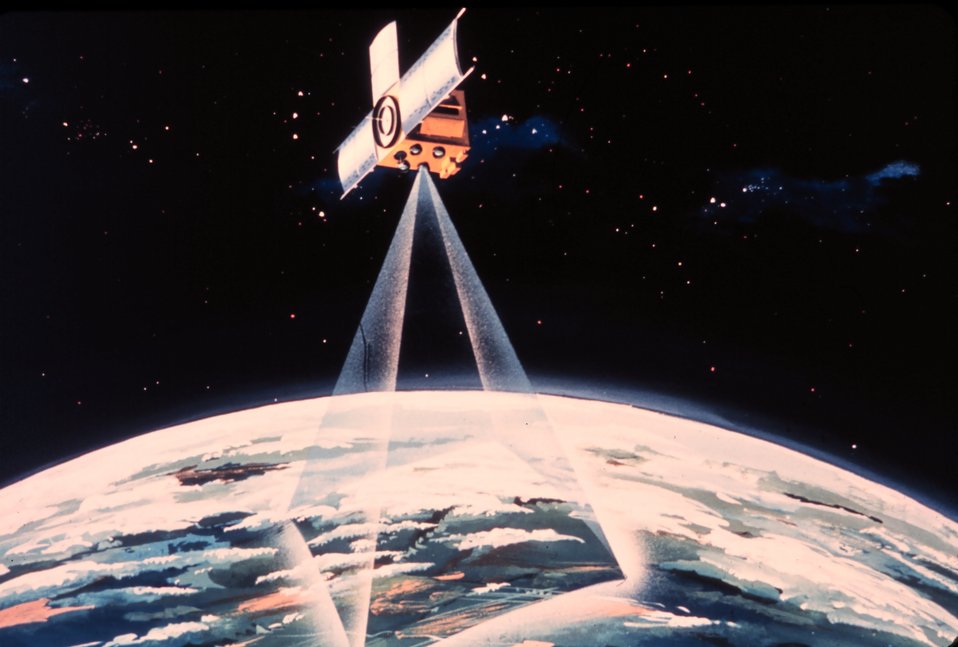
Graphic of ITOS satellite series - included ITOS-1, and NOAA-2 to NOAA-5. ITOS-1 also known as TIROS M.